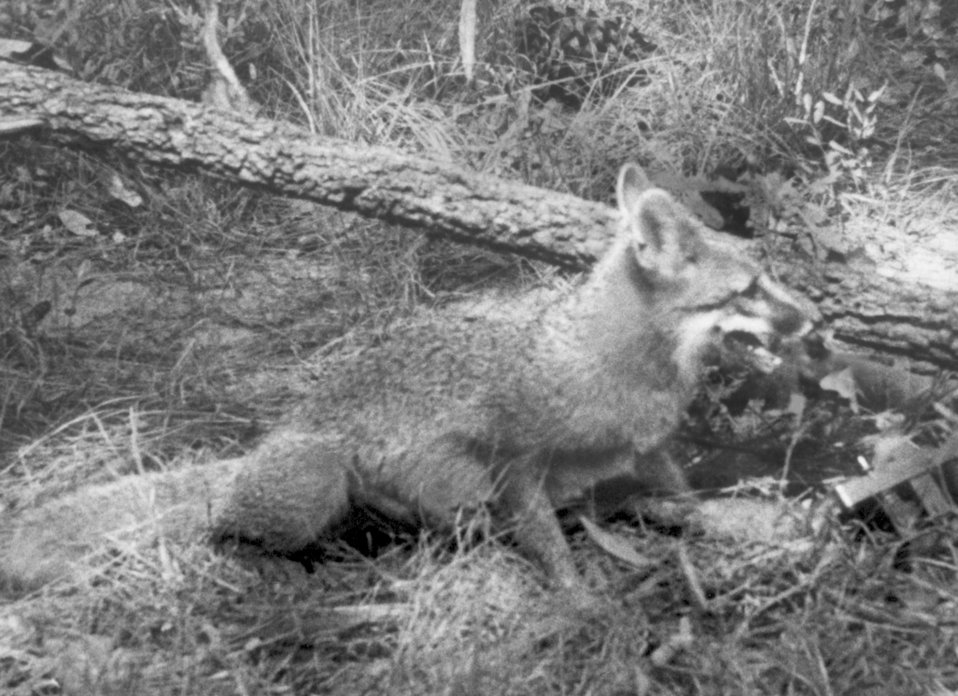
A photograph of a rabid fox sitting in a wooded area.